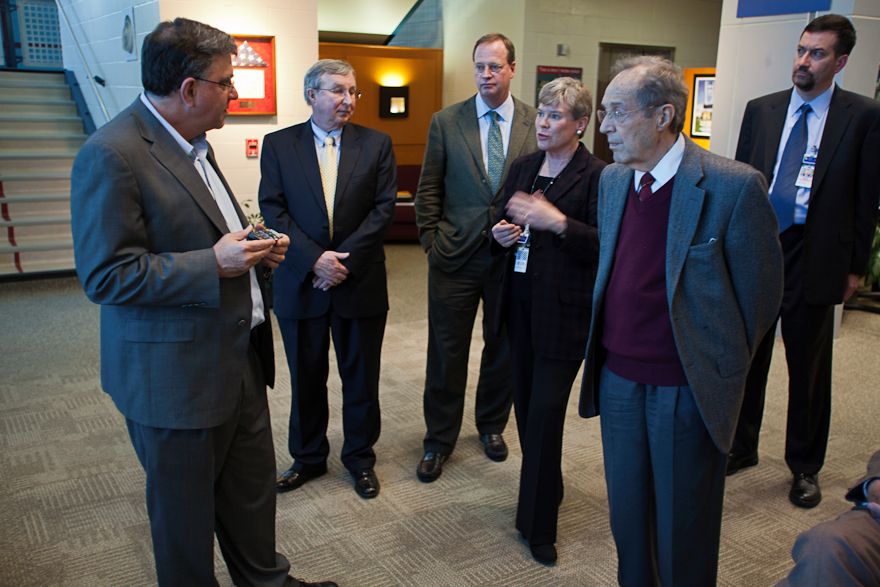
Acting Under Secretary Gottemoeller, Former Secretaries Schultz and Perry Visit the National Ignition Facility

Acting Under Secretary of State for Arms Control and International Security Rose Gottemoeller, Former Secretary of State George Schulz, and Former Secretary of Defense William Perry tour the National Ignition Facility at the Lawrence Livermore National Laboratory in Livermore, California, on February 7, 2012. [Lawrence Livermore National Laboratory by Jacqueline McBride]